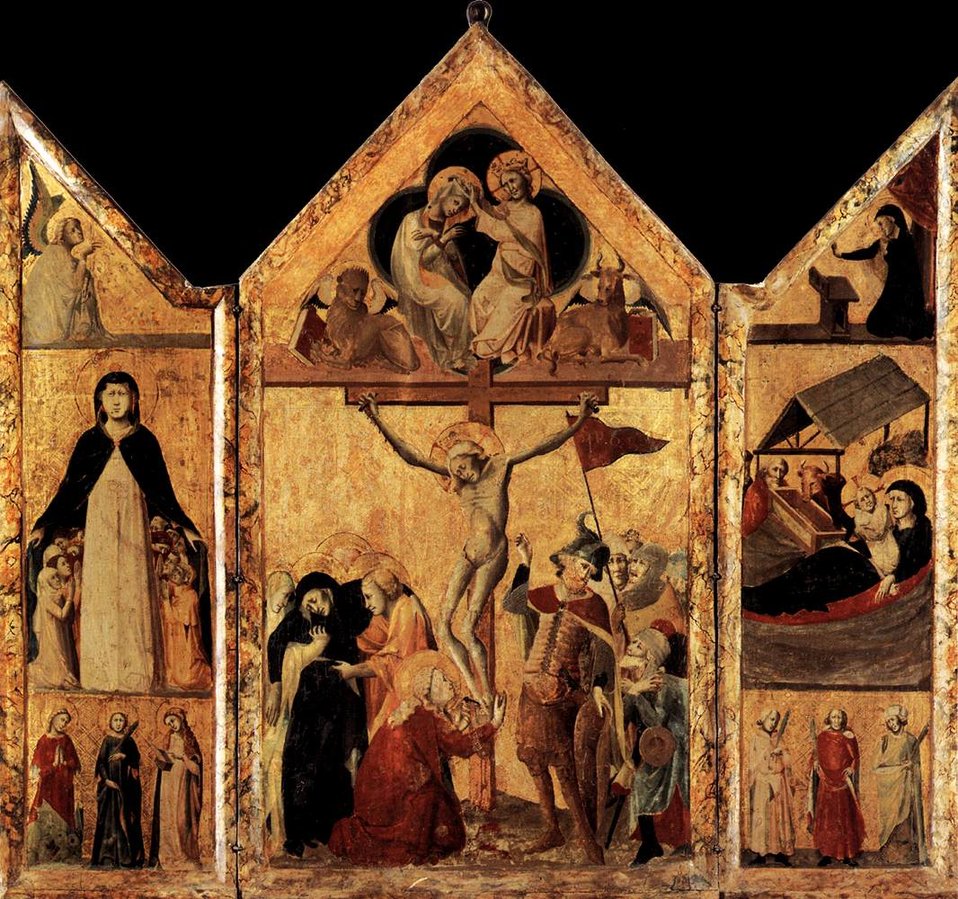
14th-century unknown painters - Triptych - WGA23891